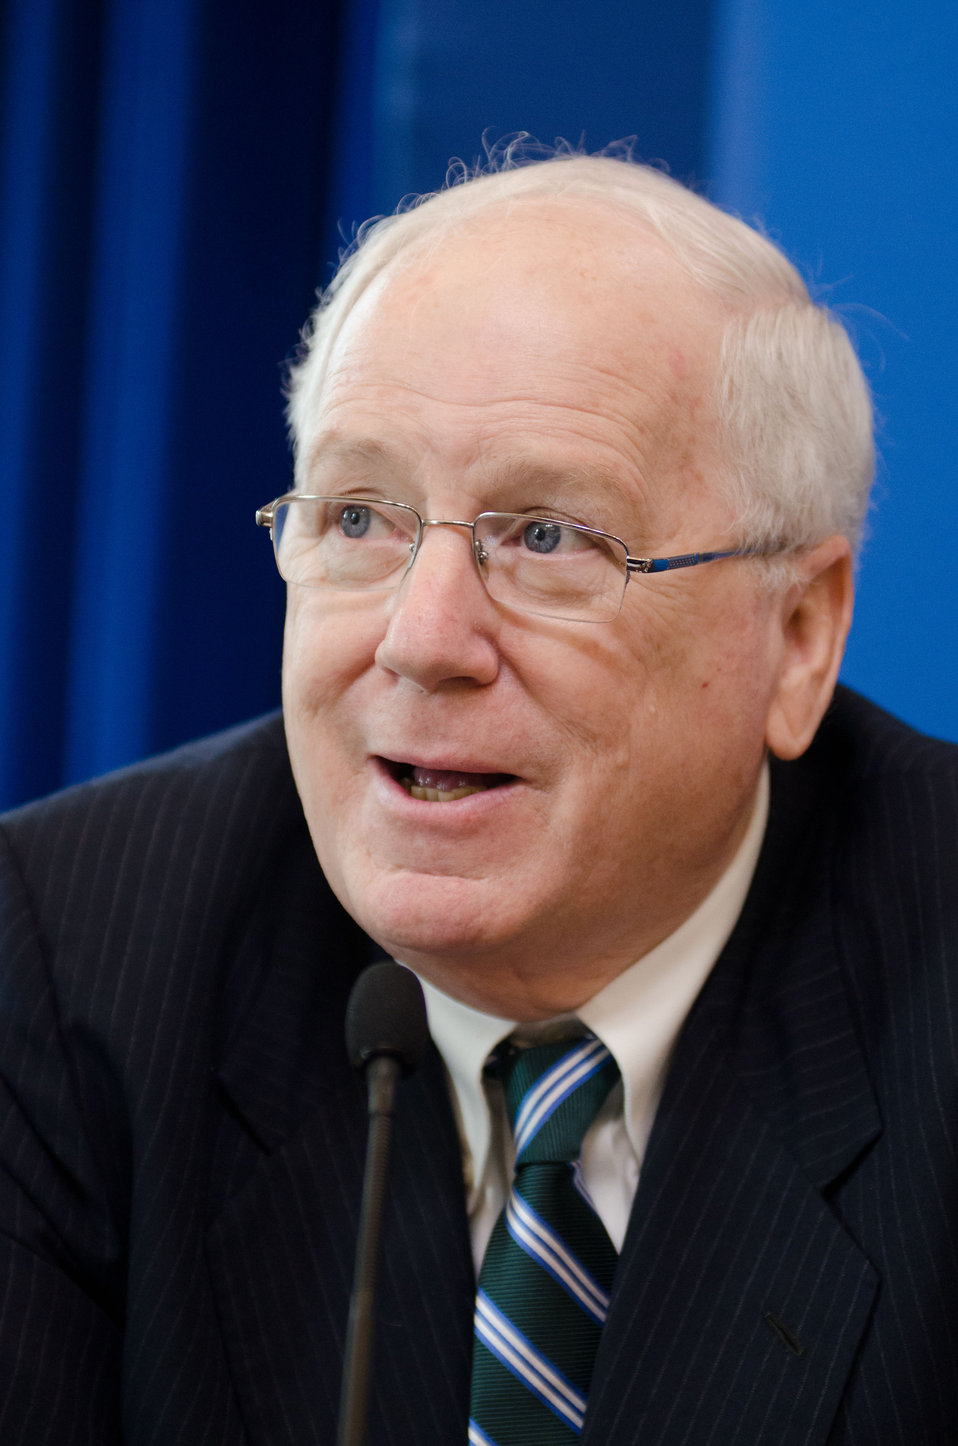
Former U.S. Ambassador to Cambodia and President of the World Food Prize Foundation Kenneth Quinn is one of eleven honorees recognized for his efforts to reduce hunger and increase food security in the U.S. and internationally at the White House Champions of Change Strengthening Food Security at Home and Abroad Event held at the White House on Thursday, September 6, 2012, in Washington, D.C.